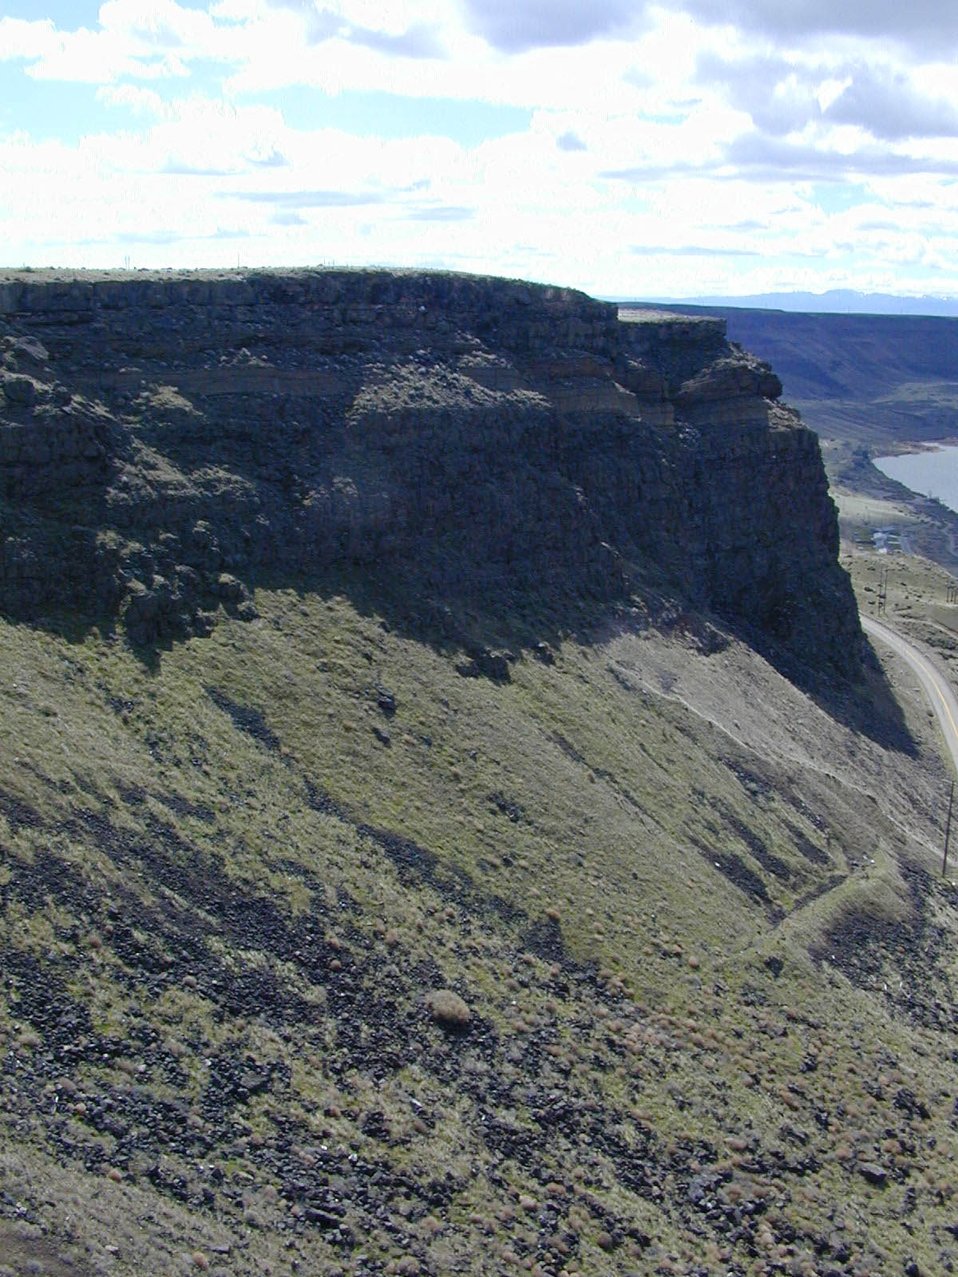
Scenic Snake River Birds of Prey National Conservation Area Lower Snake River District LSRD Snake River Canyon